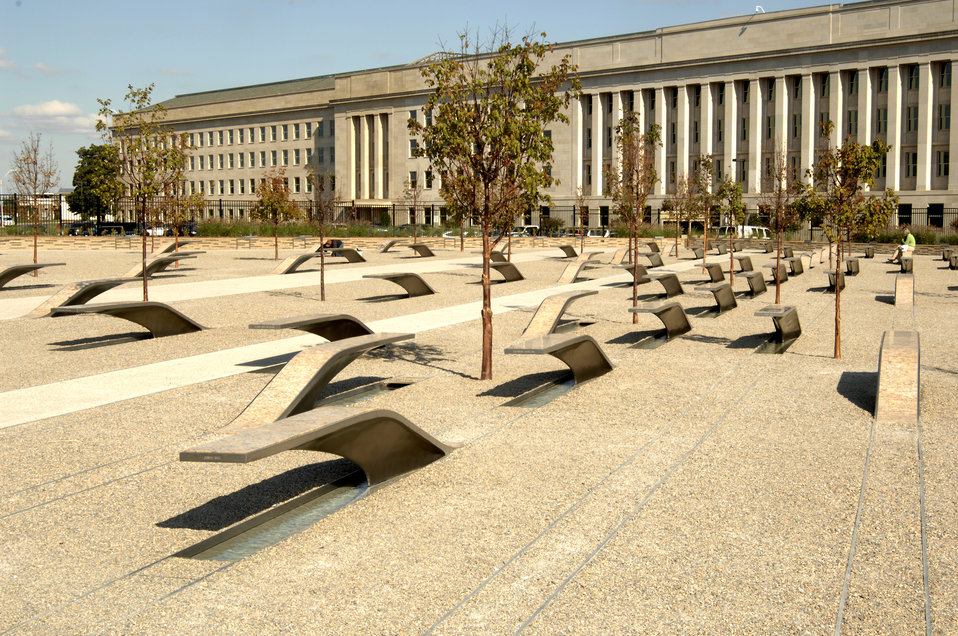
The Pentagon Memorial is designed so that the nation may remember and reflect on the events that occurred on September 11, 2001. To honor the 184 victims, 184 illuminated benches have been arranged according to the victim's ages, starting with Dana Falkenberg, 3, to John Yamnicky Sr., 71, and each bench is engraved with the name of a victim. The benches representing the victims that were inside the Pentagon are arranged so those reading the names will face the Pentagon's south facade, where the plane struck the building. The benches dedicated to victims aboard the plane are arranged so that those reading the engraved name will be facing skyward along the path the plane traveled. If more than one member of a family died during the attack, family names are listed in the reflecting pool under the bench. A wall along the edge of the Memorial begins at a height of 3 inches and rises to a height of 71 inches, the ages of the youngest and oldest victim of the attack, and approximately 85 Paperbark maple trees are planted on the memorial grounds. The Memorial was dedicated and opened to the public on September 11, 2008. This photo was taken at the Pentagon memorial located southwest of the Pentagon in Arlington, Virginia on October 23, 2008.